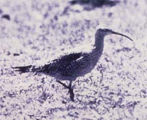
5684

Black and white image of Eskimo curlew standing on one leg in low vegetation.
Pulled from the USFWS National Digital Library